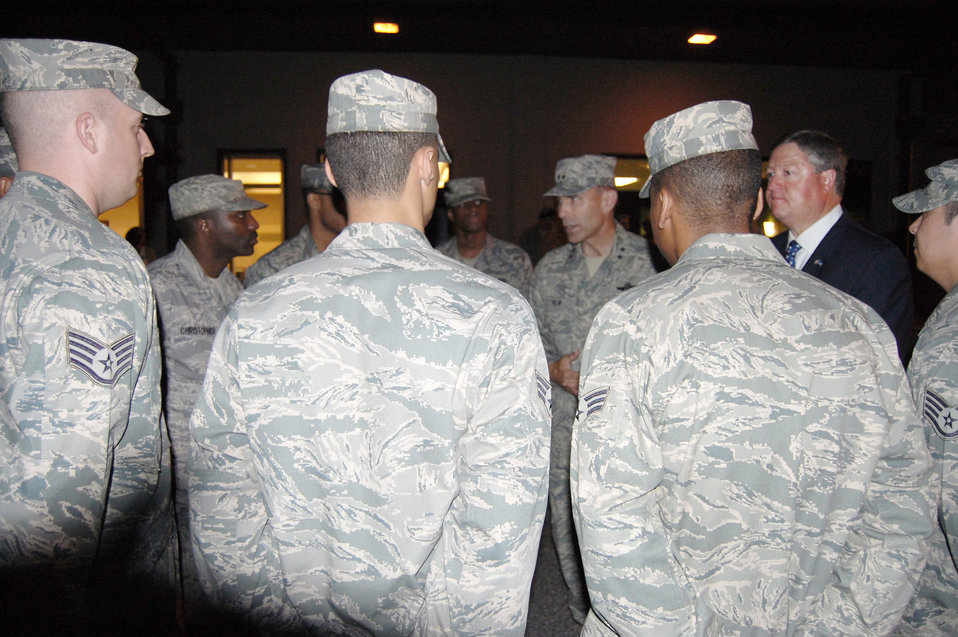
Air Force casualties from F-15E crash arrive at Dover

Maj. Gen. William J. Rew joins Secretary of the Air Force Michael B. Donley as they speak with Air Force Mortuary Affairs Operations Center carry team members prior to a dignified transfer for two Air Force captains killed in an F-15E Strike Eagle crash in Afghanistan in support of Operation Enduring Freedom July 19 at Dover Air Force Base, Del. General Rew is the director of operational planning, policy and strategy, and the deputy chief of staff for operations, plans and requirements at the Pentagon.